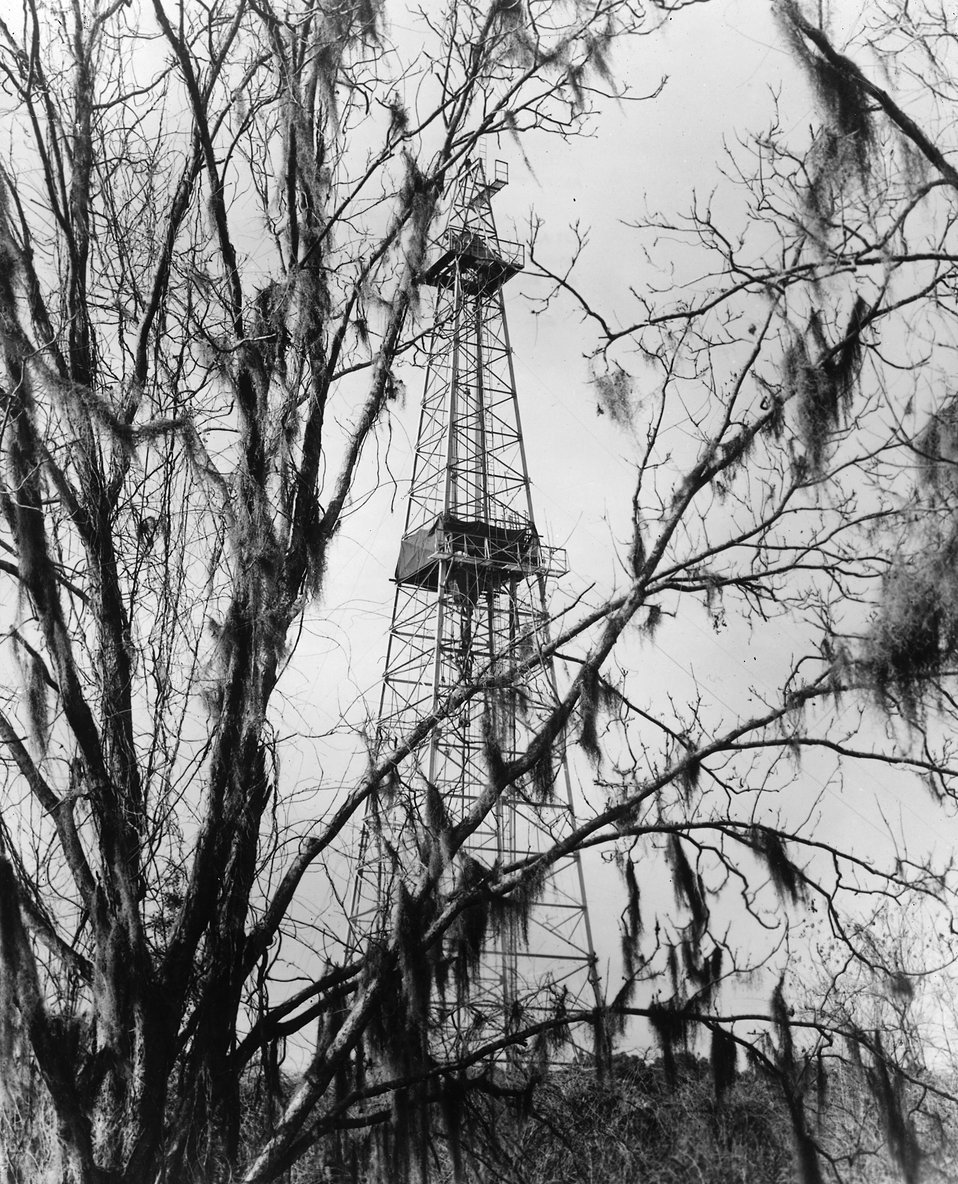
Oil rig. c. undated